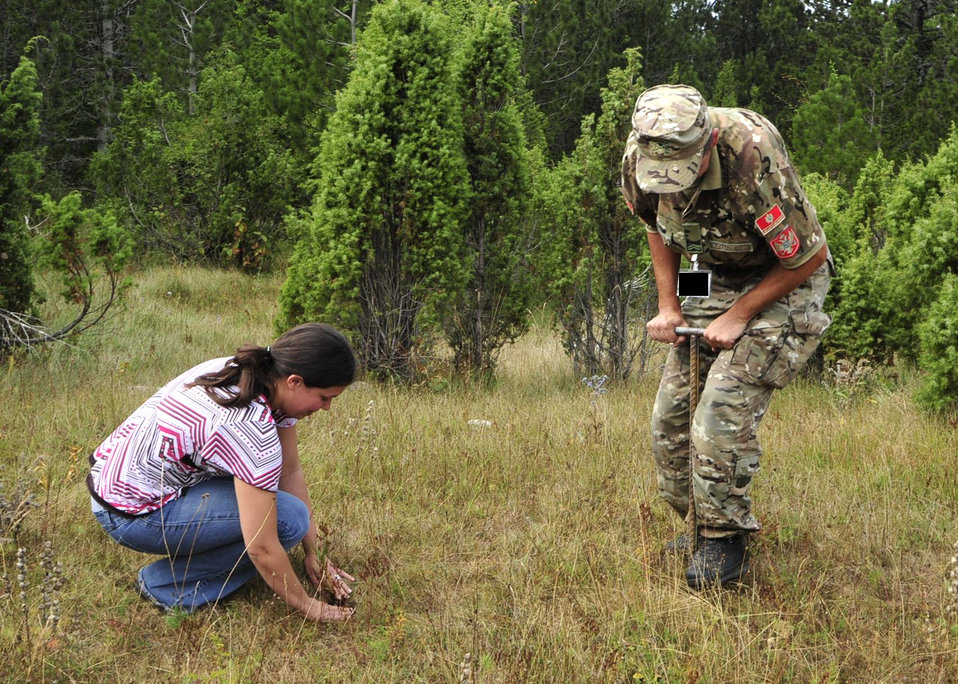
MEDCEUR 2010 kicks off with community day

Staff Sgt. Teresa Allen plants a black pine tree as Montenegrin Army Corporal Pogyre Markovic makes a hole for the next tree Sept. 8, 2010, in the Topolovo region of Montenegro. Sergeant Allen is one of several U.S. armed forces members in Montenegro for MEDCEUR 10, a Joint Chiefs of Staff-sponsored Partnership for Peace medical training exercise for central and eastern Europe. Sergeant Allen 48th Fighter Wing chaplain assistant from Royal Air Force Lakenheath, England.